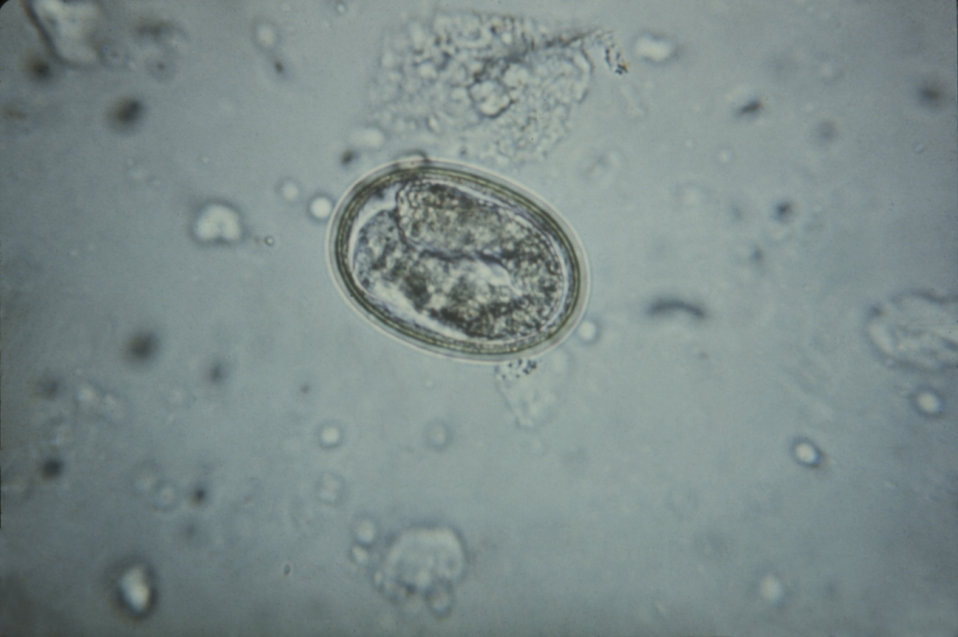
Ascaris lumbricoides egg

This micrograph depicts an embryonated Ascaris lumbricoides egg with no outer mammillated layer, i.e., 'decorticated'.